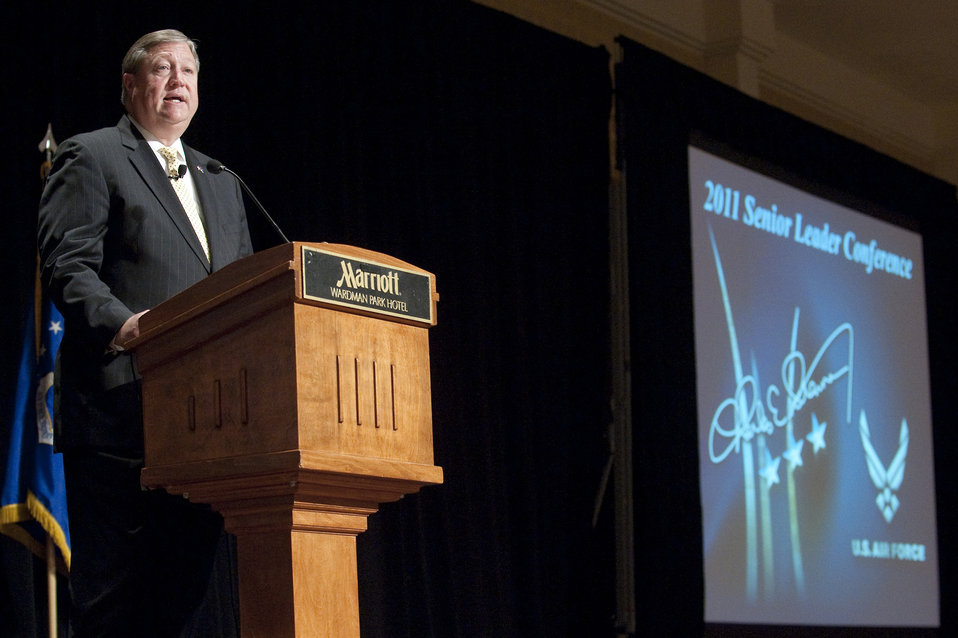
Air Force Reserve Command Senior Leader Conference

Secretary of the Air Force Michael Donley addresses Air Force Reserve Command senior leaders May 16, 2011, during their annual conference in Washington, D.C.